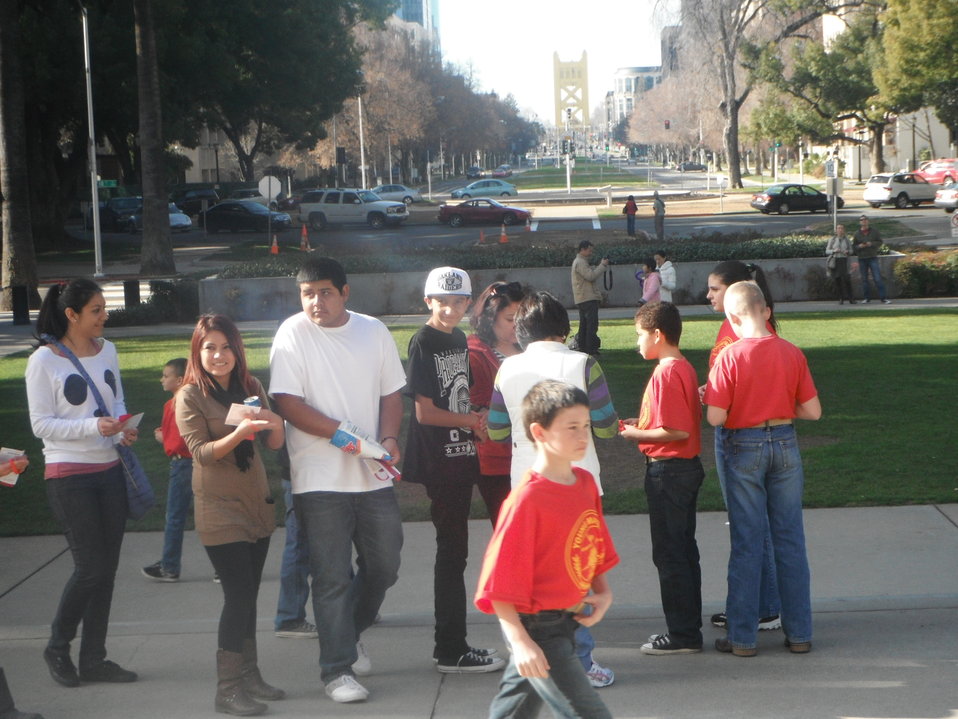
Ray Jacobs Young Marines, NDFW 2013

Sacramento, Ca. National Drug Facts Week Events, Feb. 2, 2013.